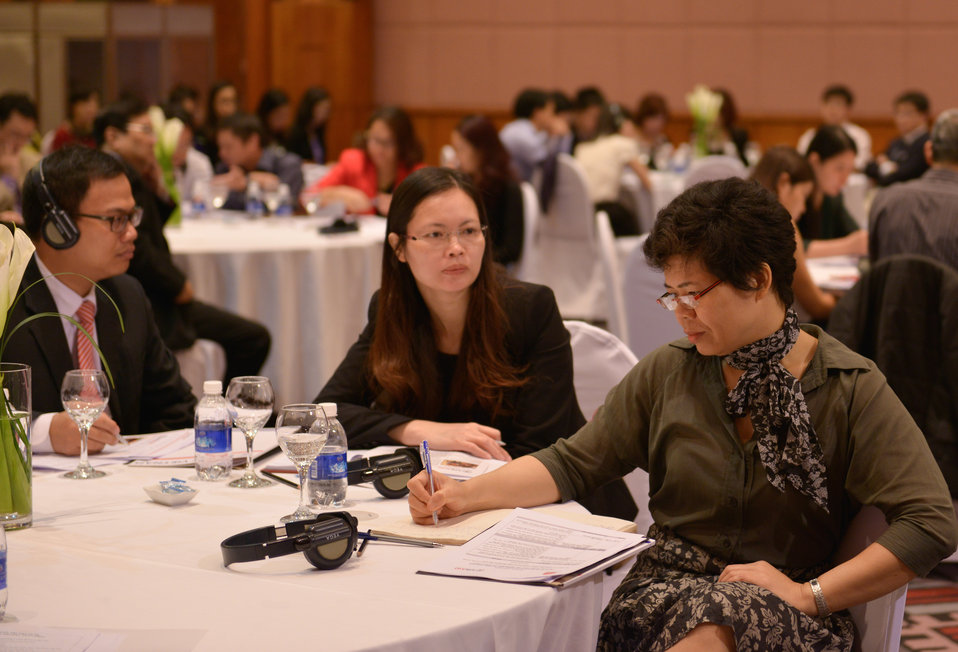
Strategic Kick-off of Governance for Inclusive Growth Program

Hanoi, April 8, 2014.